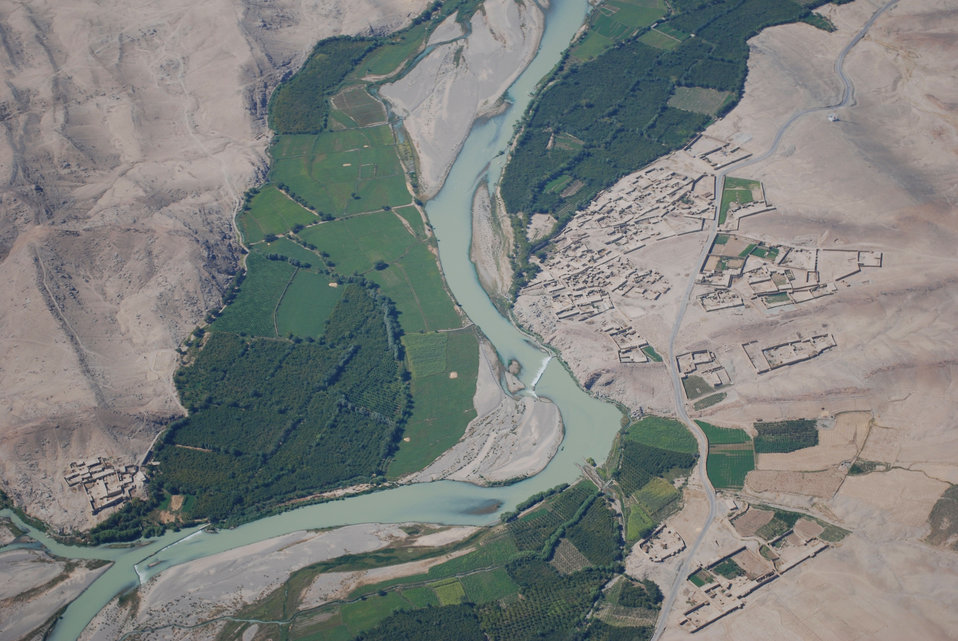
'On the Road' in Kandahar